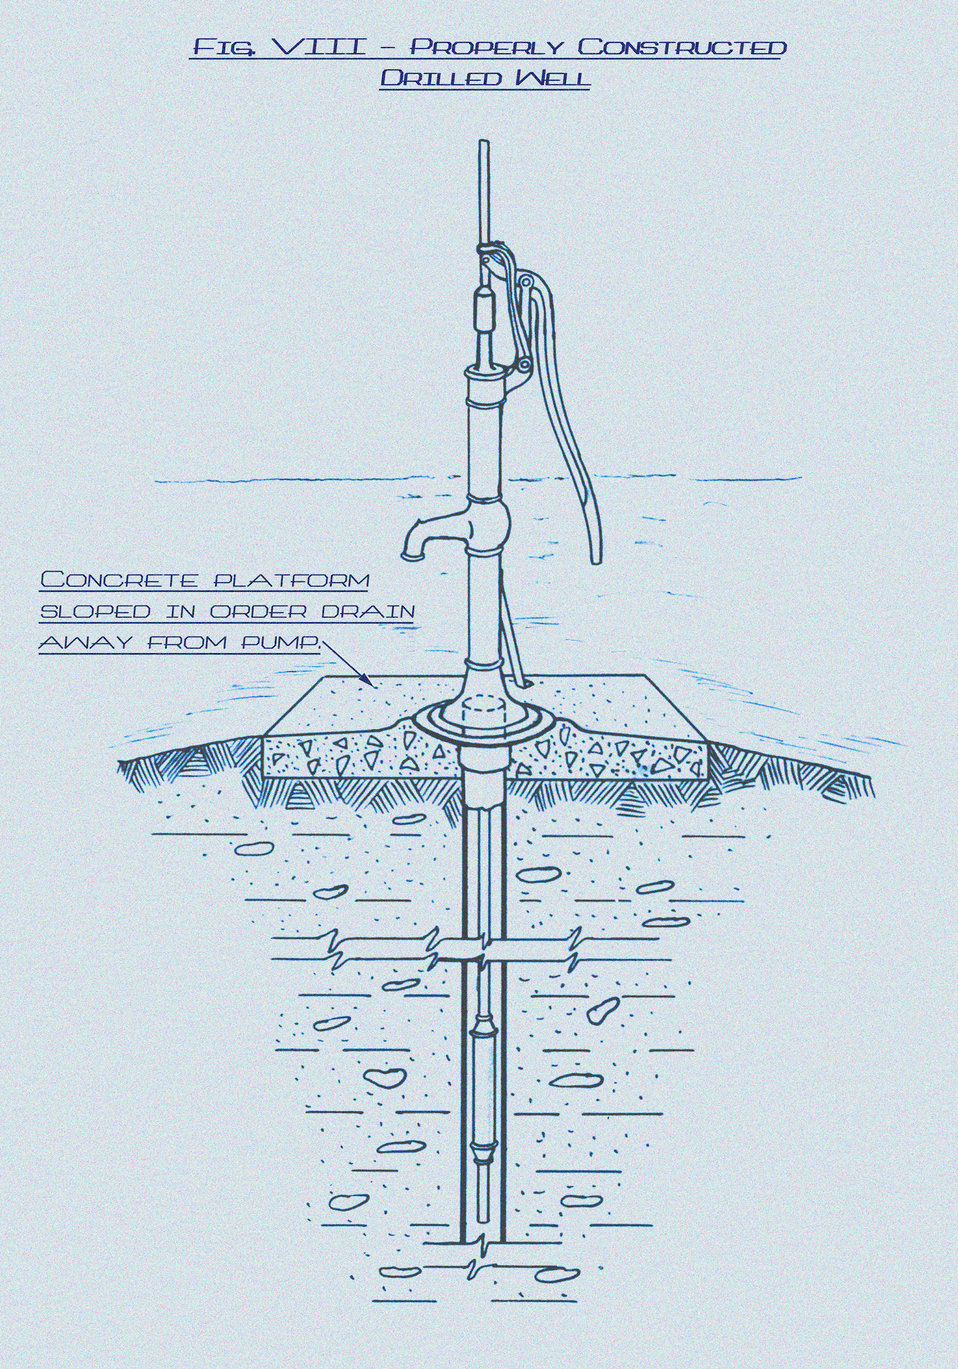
This historic diagram, which had been digitally enhanced and colorized, depicted a properly constructed 'driven' type well with its cylinder suspended in the lumen of the centrally driven pipe. The well's structural details included a sloped concrete platform, which ensured that water flowing out from the pump drained away from the well. Published in 1928, this was one of a series of instructional drawings used by the Minnesota Board of Health to train its state public health workers.